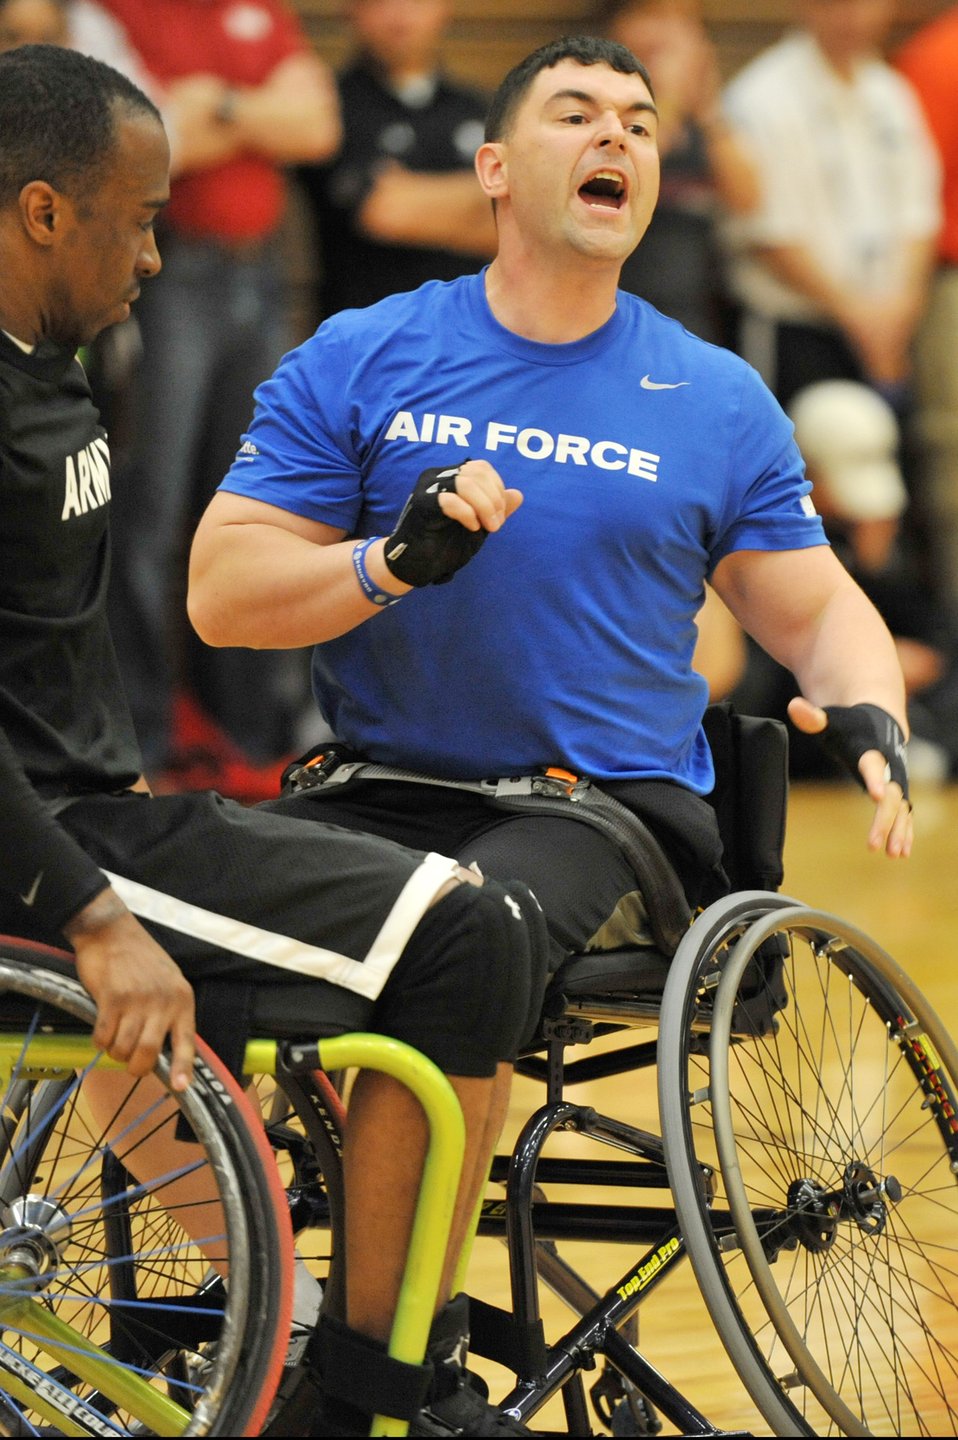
basketball prelims

Matthew Bilancia, a member of the Air Force wheelchair basketball team, competes May 18, 2011, during the Warrior Games at the U.S. Olympic Training Center in Colorado Springs, Colo. Some 200 wounded warriors and disabled veterans from all of the military services competed in paralympic-style athletic events May 16 to 21.